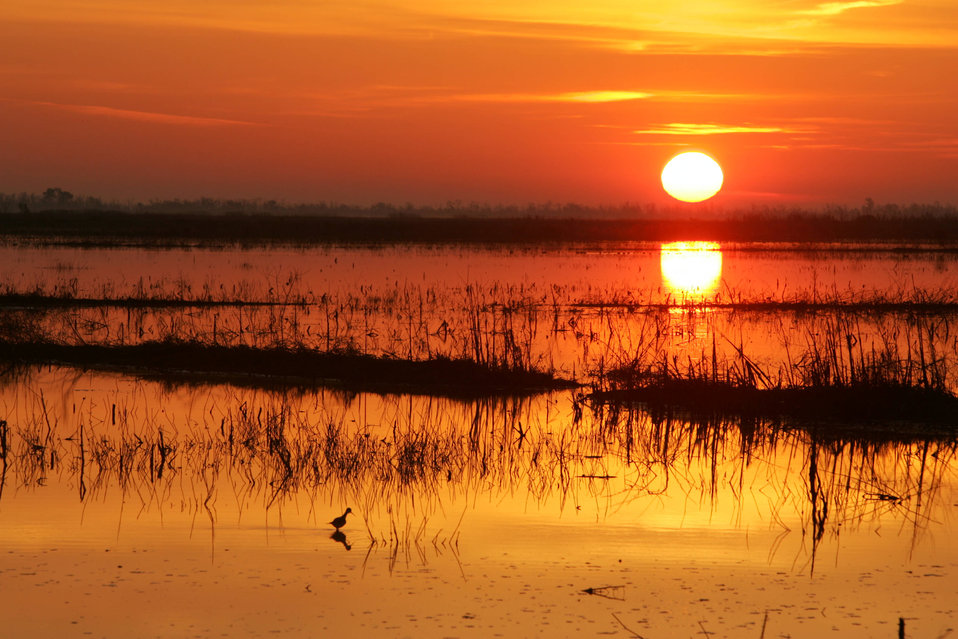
Sunrise

Photo credit: USFWS/Steve Hillebrand

Coastal marshes and mangroves provide clean water, groundwater recharge, and act as natural buffers against storms, absorbing floodwaters and providing erosion control with vegetation that stabilizes shorelines and absorbs wave energy. If those habitats are degraded and/or destroyed, then adjacent inland communities will have less protection from sea level rise, and may experience more direct storm energy and flooding